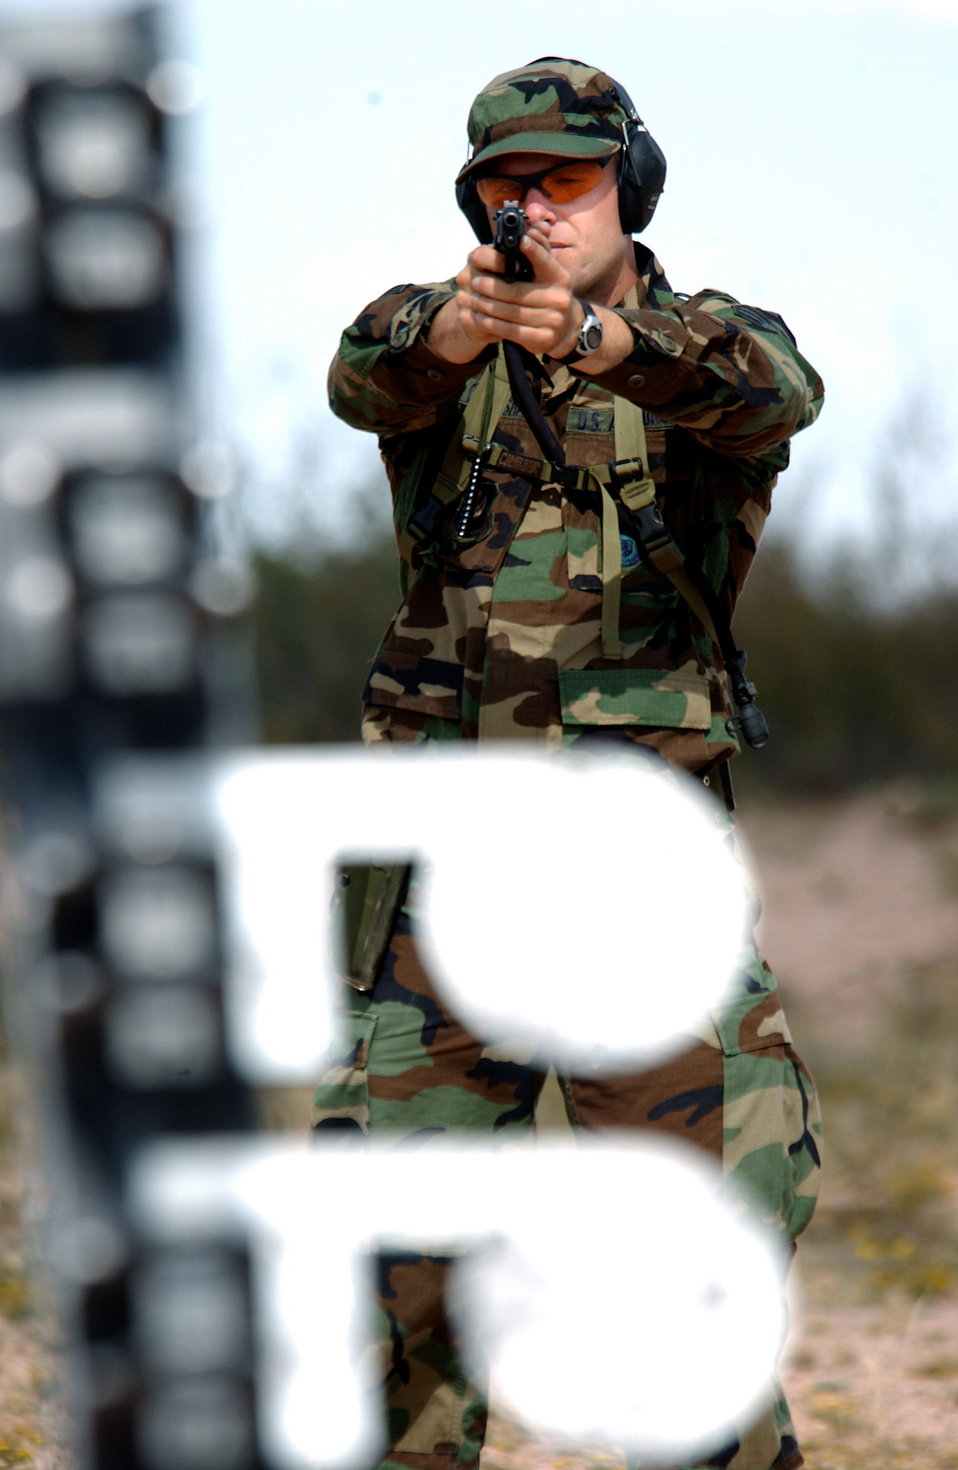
Take Aim

FORT HUACHUCA, Ariz. -- Senior Airman Robert Crenshaw aims with an M-9 Berretta at iron targets during a course that will tests marksmanship and speed Oct. 11. Members of the U.S. Air Forces in Europe Defender Challenge team are spending three weeks here in preparation for the 2004 Defender Challenge competition. Defender Challenge, held at Lackland Air Force Base, Texas, is a security forces competition. Airman Crenshaw is assigned to the 48th Security Forces Squadron at Royal Air Force, England.